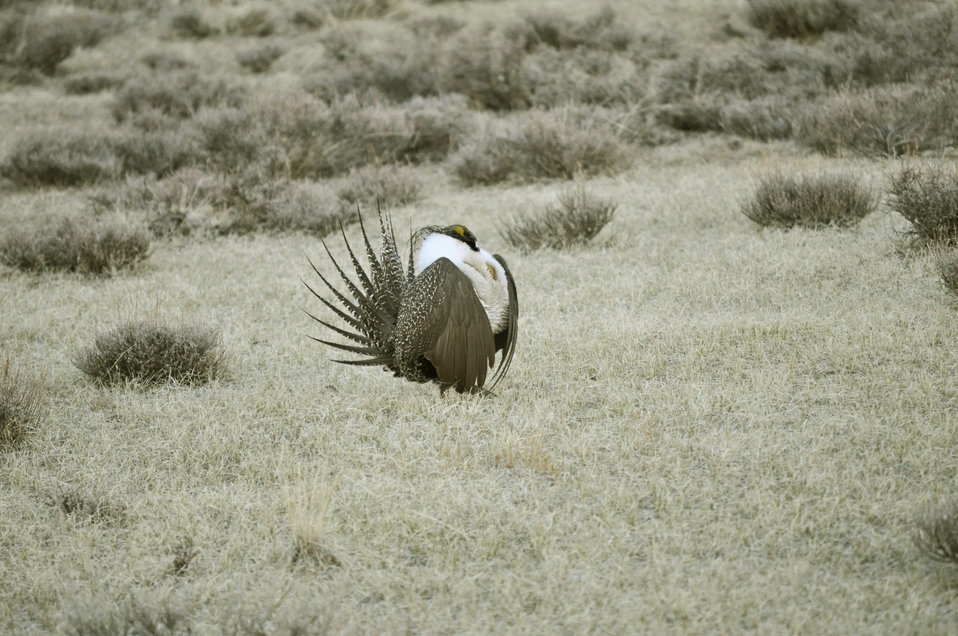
Male greater sage-grouse struts at lek (dancing or mating grounds) to attract females near Bodie, California.